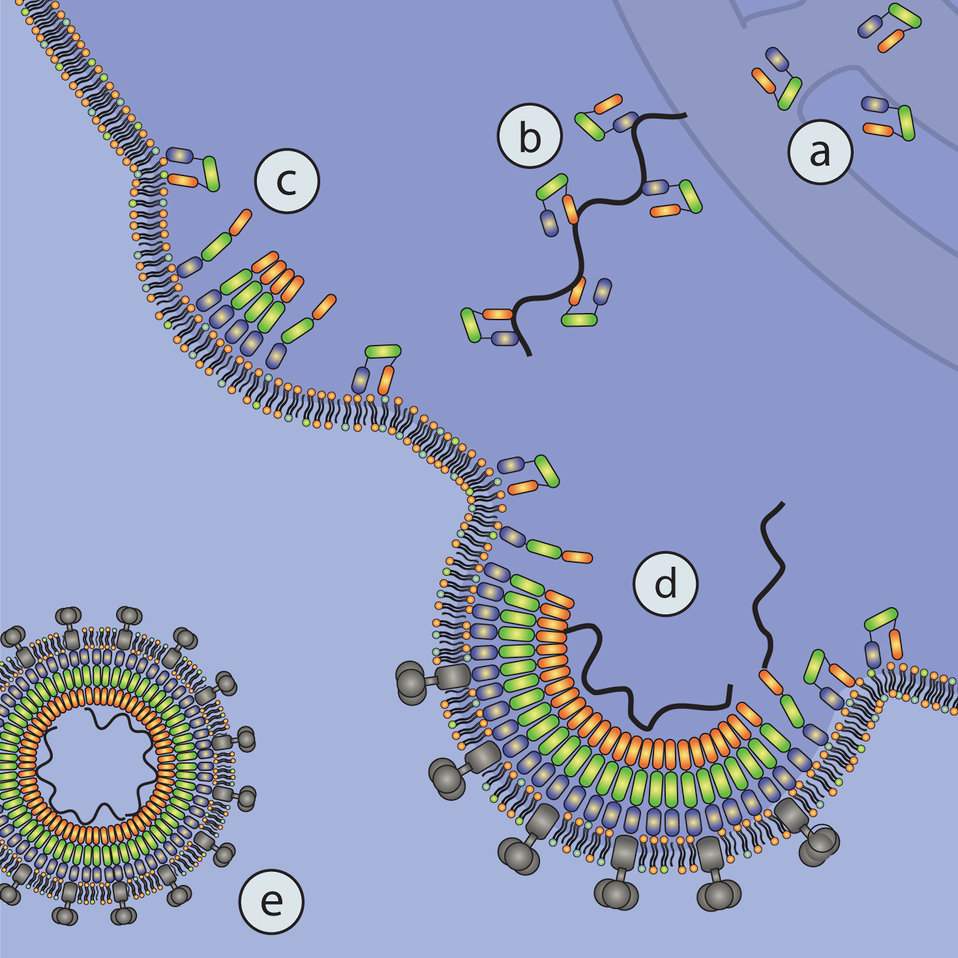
Gag Molecules

The Gag protein is central to the assembly of new HIV virus particles. (a) Folded Gag molecules (multicolored) arise in the cellular cytoplasm. (b) Gag binds the viral RNA (black wavy lines) and drags it into the forming particle. (c) Gag molecules also may create assembly sites, where (d) Gag must stretch out to pack into the growing virus. (e) Virus particles eventually bud off from the host cell.